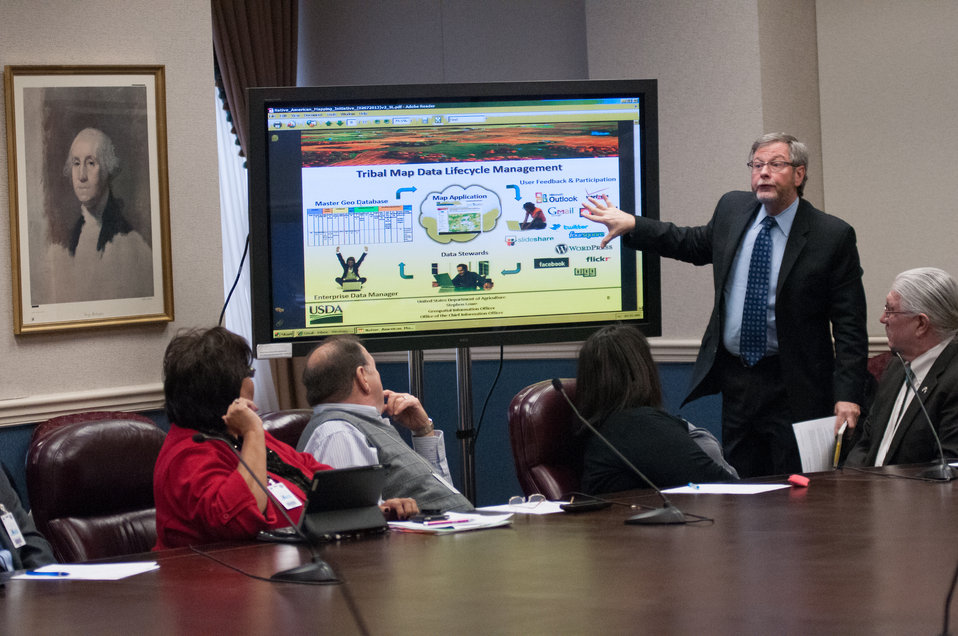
U.S. Department of Agriculture (USDA) Office of the Chief Information Officer Geospatial Information Officer Steve Lowe, talks about Geospatial Information Systems as it applies to Tribal Lands Mapping, during the USDA and American Indian Higher Education Consortium Leadership Group Winter Meeting, at the USDA Whitten Building, Williamsburg Room, in Washington D.C., on Friday, Feb. 8, 2013.